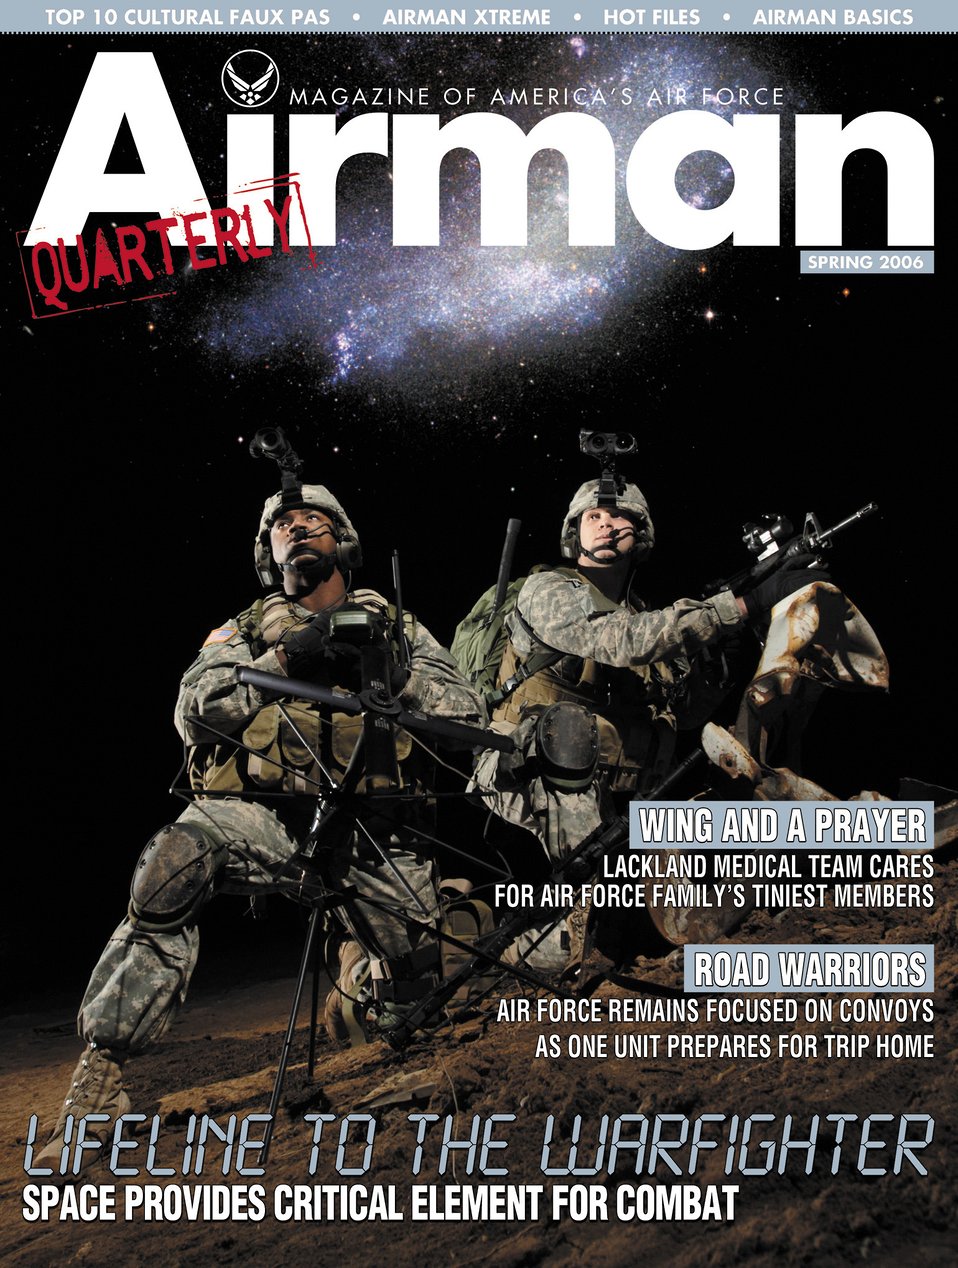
Spring 2006 quarterly issue of Airman